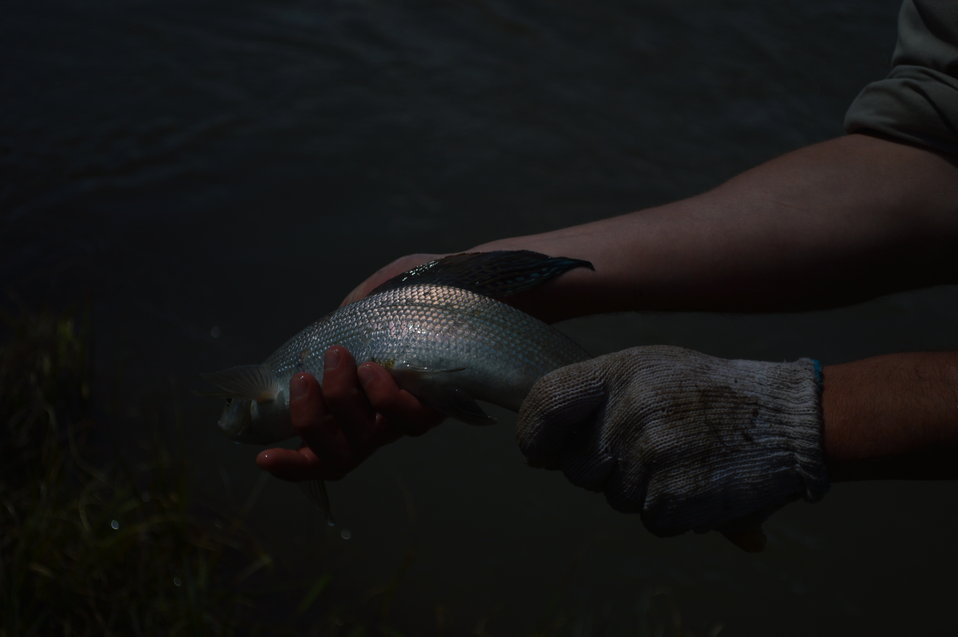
Regional Leadership Visit to Montana 2014